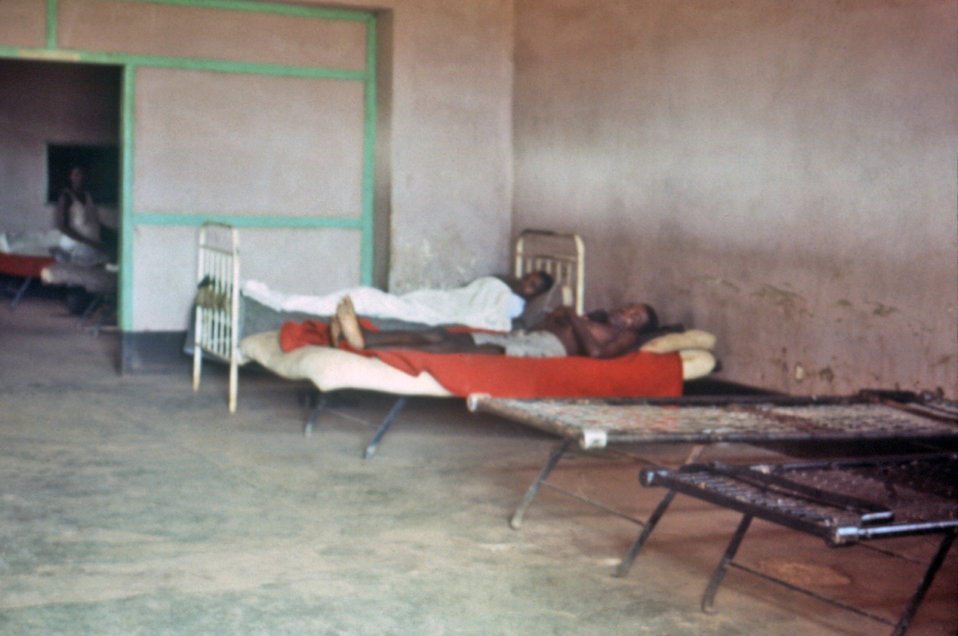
This photograph, taken by CDC's EIS officer Dr. Roy Baron, showed bedridden patients in a Sudanese hospital during the country's 1976 Ebola outbreak.